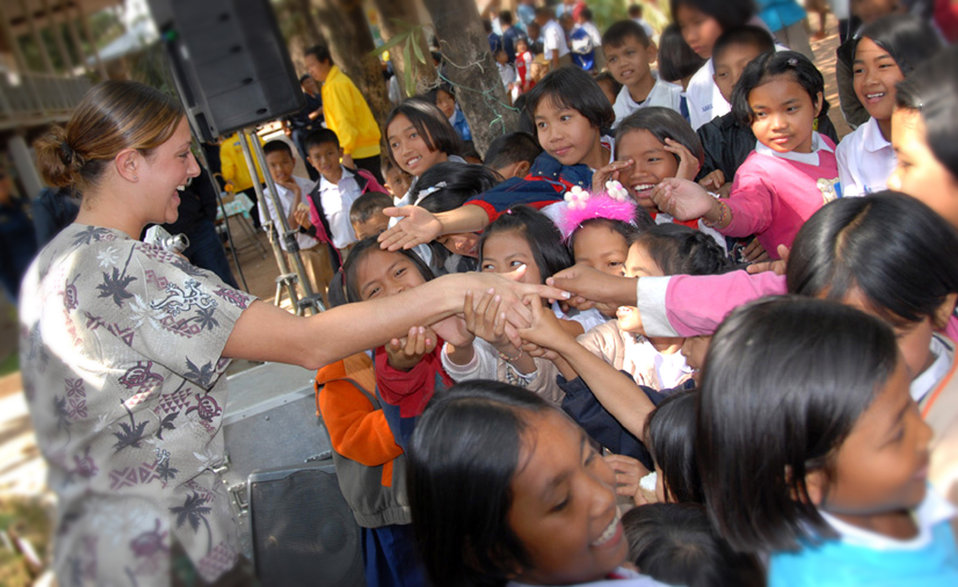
Sharing a happy moment

Senior Airman Elizabeth Auster shakes hands with Thai children from the Ban Chaimongkon school Jan. 30 in Korat during a medical humanitarian assistance visit. Airman Auster is from 15th Aeromedical Dental Squadron at Hickam Air Force Base, Hawaii.